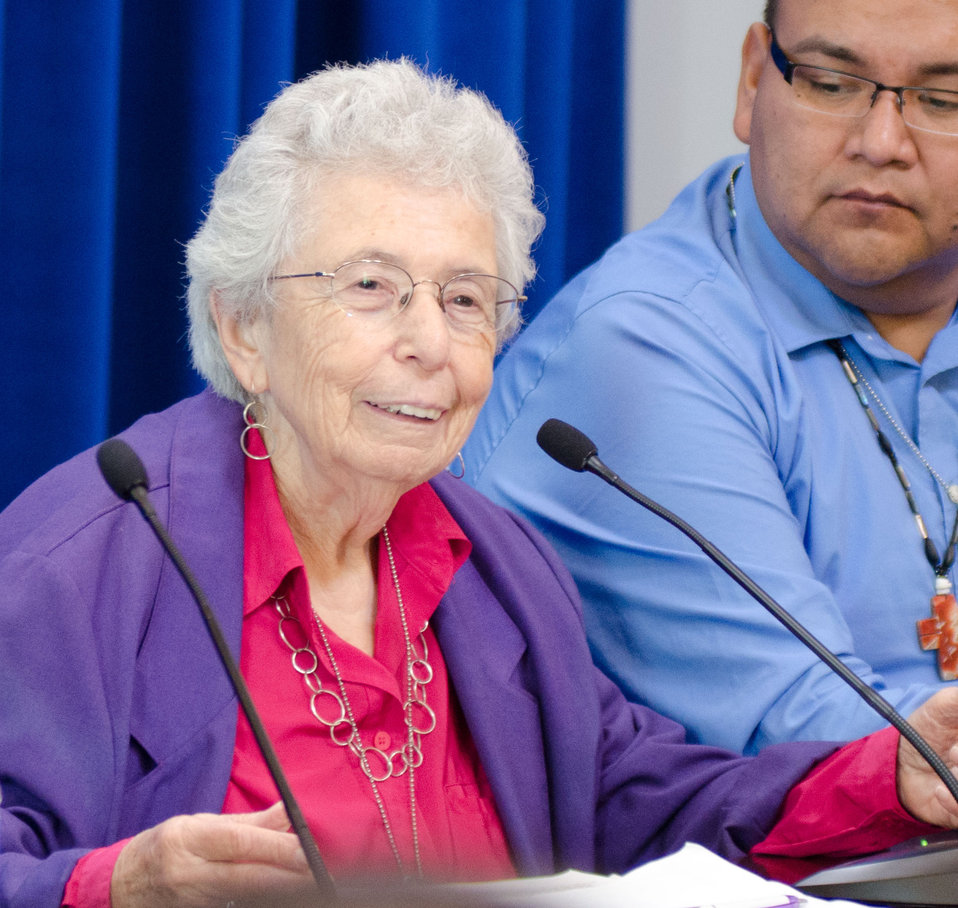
Community Food Advocates, Inc. Co-Director Kathy Goldman talked about how neighbors are willing to help each other out when there is a need for food, during a panel discussion session at an event honoring her and ten others for efforts to reduce hunger and increase food security in the U.S. and internationally at the White House Champions of Change Strengthening Food Security at Home and Abroad Event held at the White House on Thursday, September 6, 2012, in Washington, D.C.